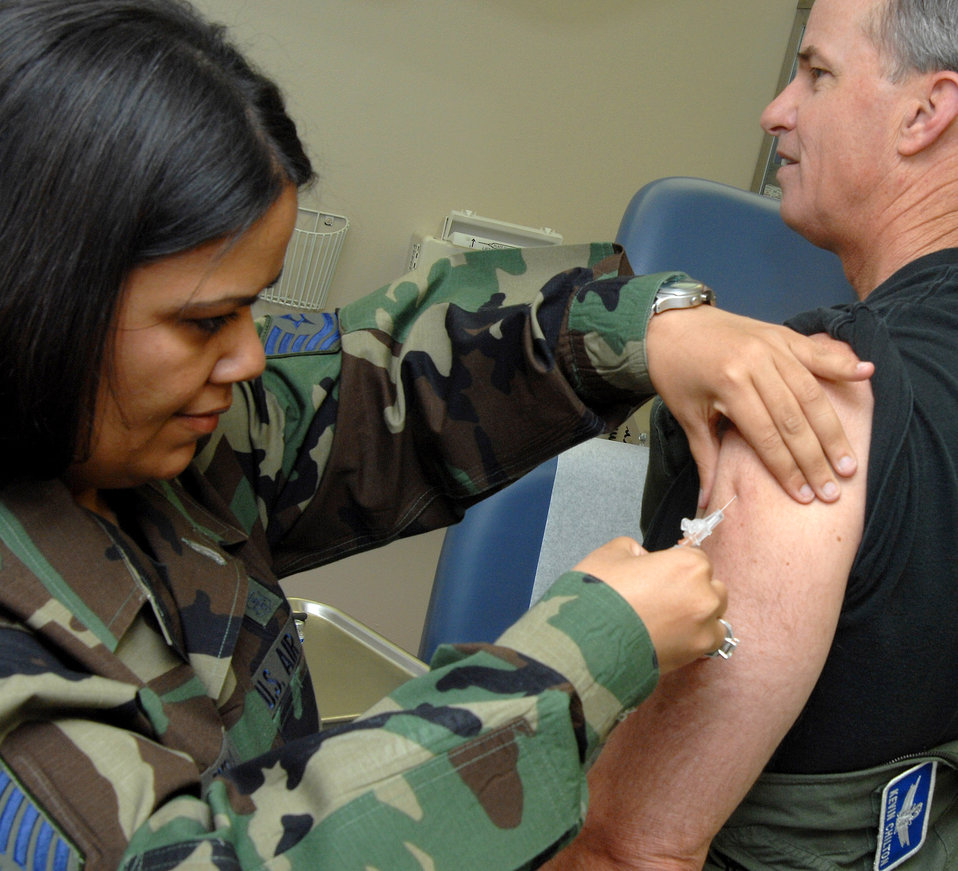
'Shooting' stars

Gen. Kevin P. Chilton receives an anthrax vaccination from Tech. Sgt. Lori Freeman May 4 at Peterson Air Force Base, Colo. The Anthrax Vaccine Immunization Program, or AVIP, mandates Airmen assigned to high-threat areas receive the anthrax vaccine series, while also providing Airmen the choice to continue anthrax vaccines if they are not assigned to a designated high-threat area. General Chilton is the commander of Air Force Space Command, and Sergeant Freeman is a medical technician with the 21st Medical Operations Squadron.